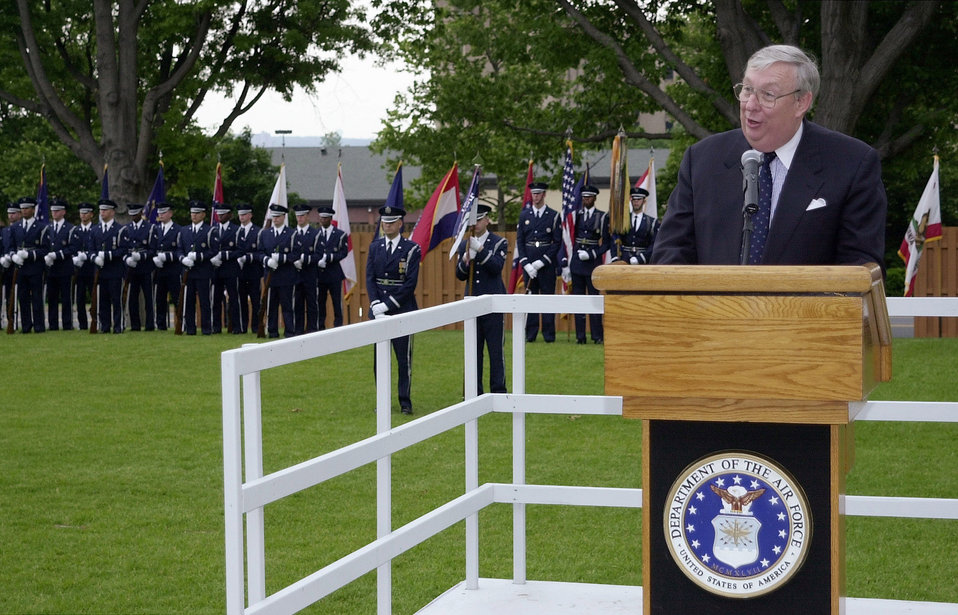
Roche

WASHINGTON -- The 20th Secretary of the Air Force Dr. James G. Roche, hosted by Chief of Staff of the Air Force Gen. Michael E. Ryan, thanks the crowd for his Air Force welcome during a full honors review and welcome to the Air Force ceremony for the newly sworn in SECAF, Bolling Air Force Base, Washington, D.C., June 6, 2001. Roche and Ryan started the day by testifying before the Senate Appropriations Committee, Subcommittee on Defense which was Roche's first trip to Capital Hill in his capacity as SECAF. Roche was sworn in on June 1, 2001 during a Pentagon ceremony.